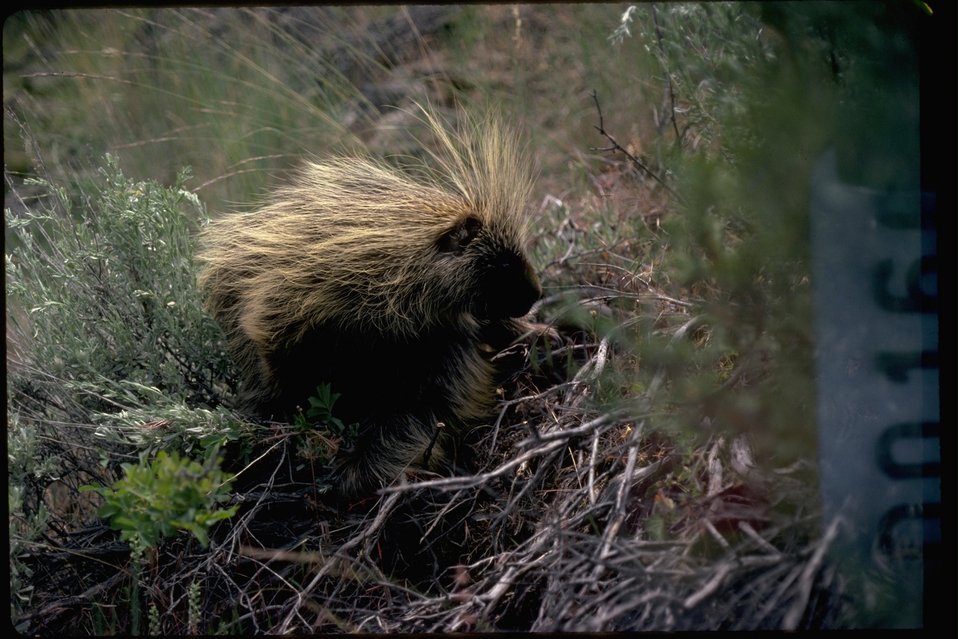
Porcupine found at Miner's Flat.